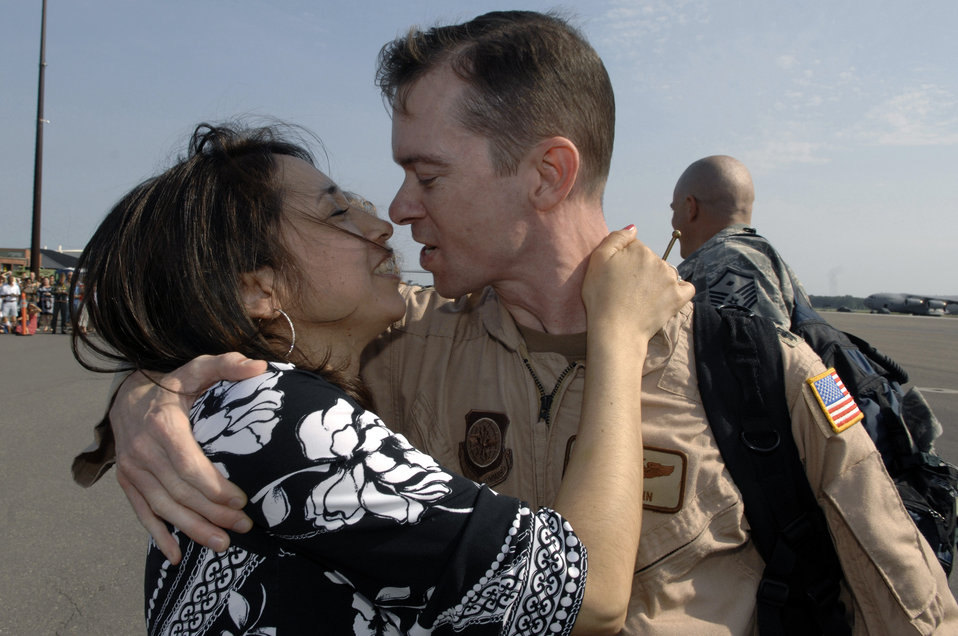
Mission complete: Charleston Airmen return home

Lt. Col. Christopher Mann reunites with wife, Isabel, May 3 at Charleston Air Force Base, S.C., More than 140 Airmen from the 16th Airlift Squadron returned from their 120-day deployment to the Middle East in support of operations Enduring Freedom and Iraqi Freedom and operations in the Horn of Africa. During the deployment, 16th AS Airmen flew the C-17 Globemaster III with more than 3,000 sorties and 6,900 combat flying hours logged. Colonel Mann is the 16th AS commander.